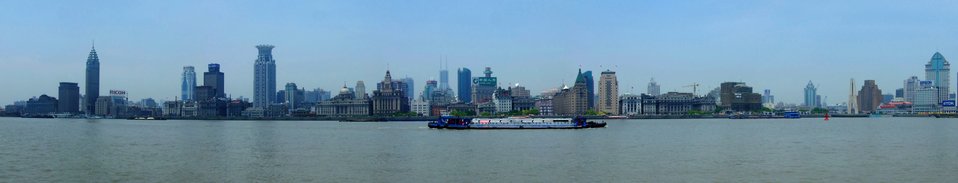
003shanghai waitan